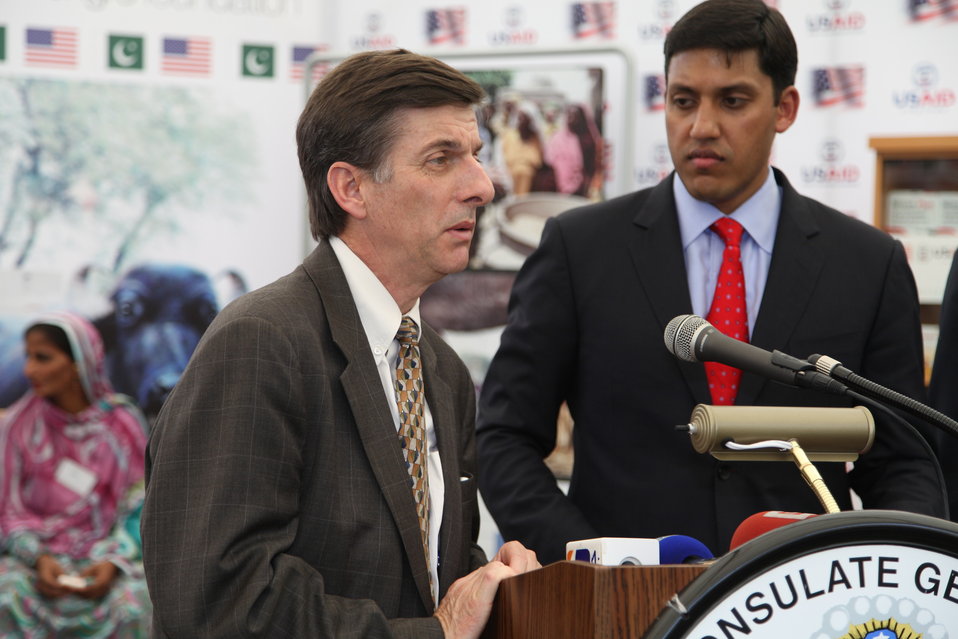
Dr. Andrew B. Session addressing the media